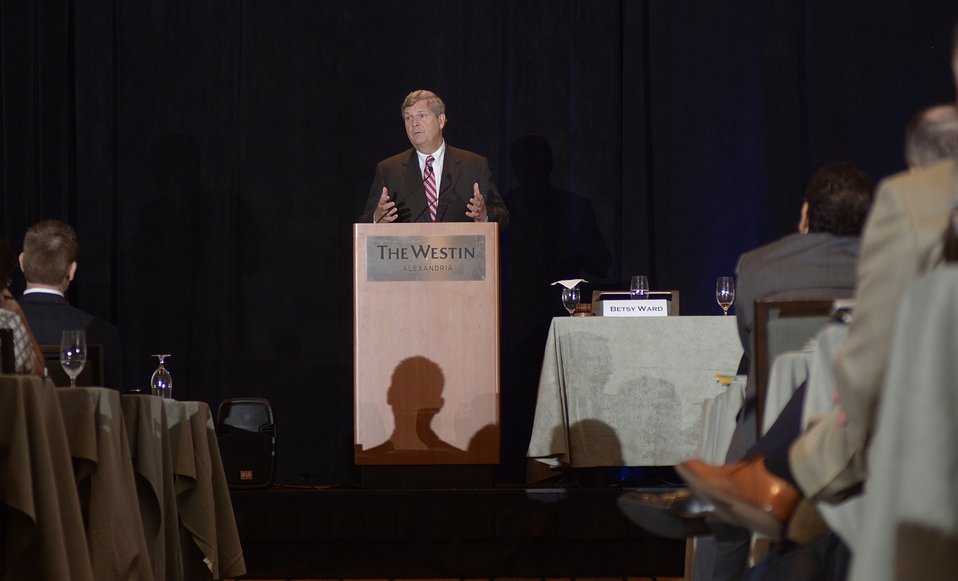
Agriculture Secretary Tom Vilsack presents keynote remarks at the U.S. Agricultural Export Development Council (USAEDC) Attaché Seminar, at the Westin Alexandria, in Alexandria, VA, on Wednesday, July 10, 2013. USAEDC is a non-profit private sector trade association that provides an exchange and coordination of information to promote the export of the products of U.S. agriculture. Their membership includes U.S. commodity trade associations, farmer cooperatives and state regional trade groups from around the country. In the interest of U.S. agricultural growers and producers their export promotion efforts, work in conjunction with the U.S. Department of Agriculture Foreign Agricultural Service.